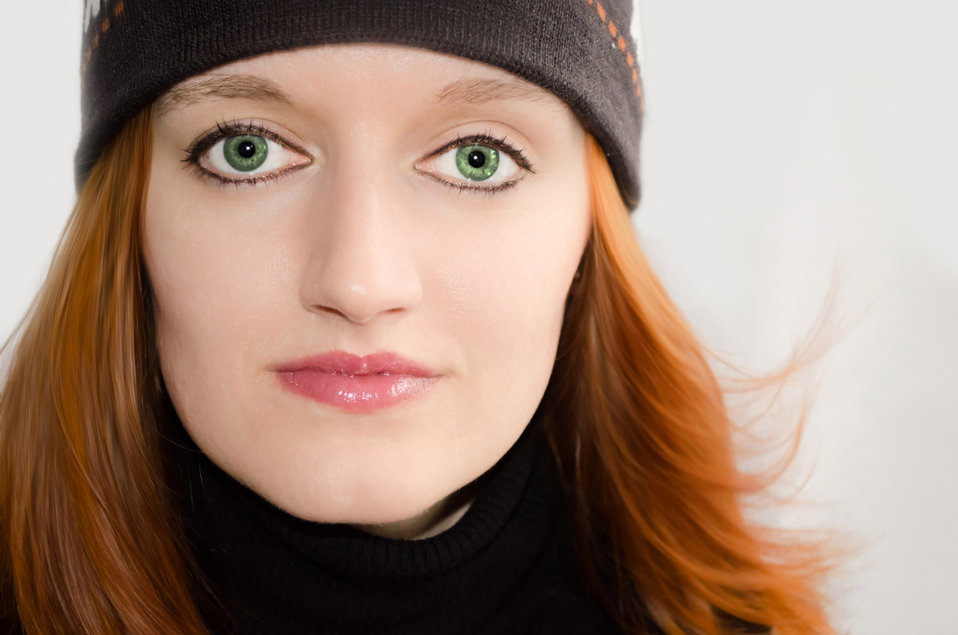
Woman with green eyes.